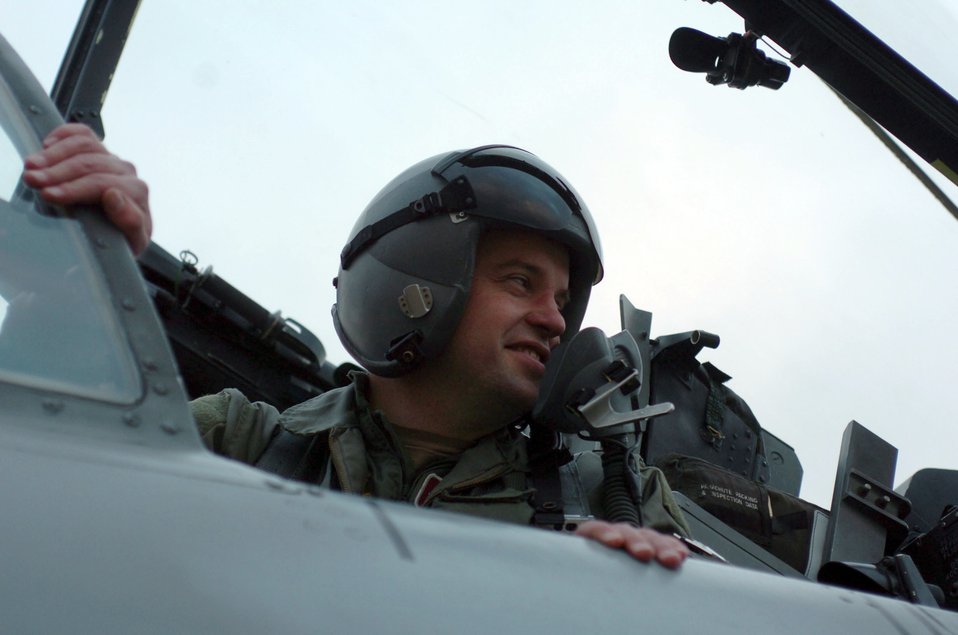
Spangdahlem pilot rescues charter plane over Germany

SPANGDAHLEM AIR BASE, Germany (AFPN) -- Maj. Pete Olson lands his A-10 Thunderbolt II after a training mission. The 81st Fighter Squadron pilot has logged about 2,500 flying hours. The major said his philosophy of training and rescue is simple: